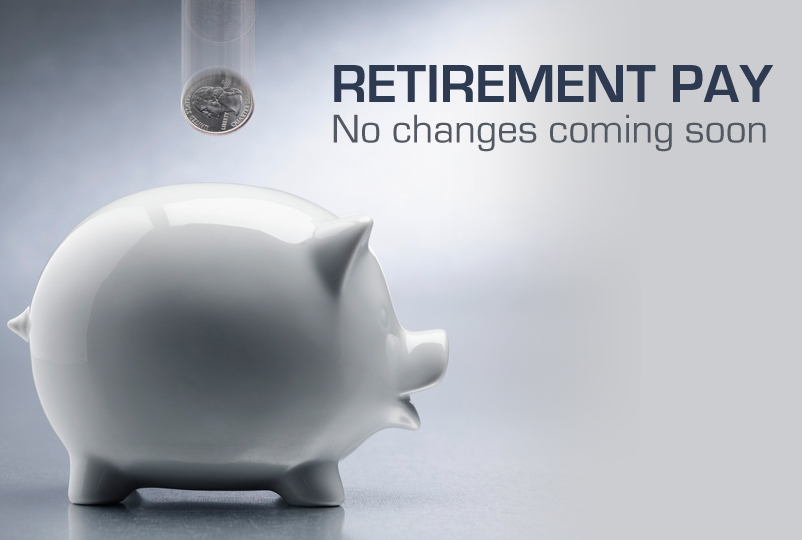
Air Force Week kicks off in New York City